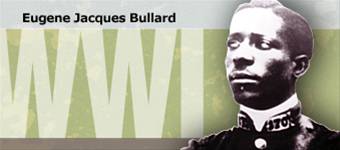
Eugene Bullard

Corporal Eugene Bullard history spotlight graphic .